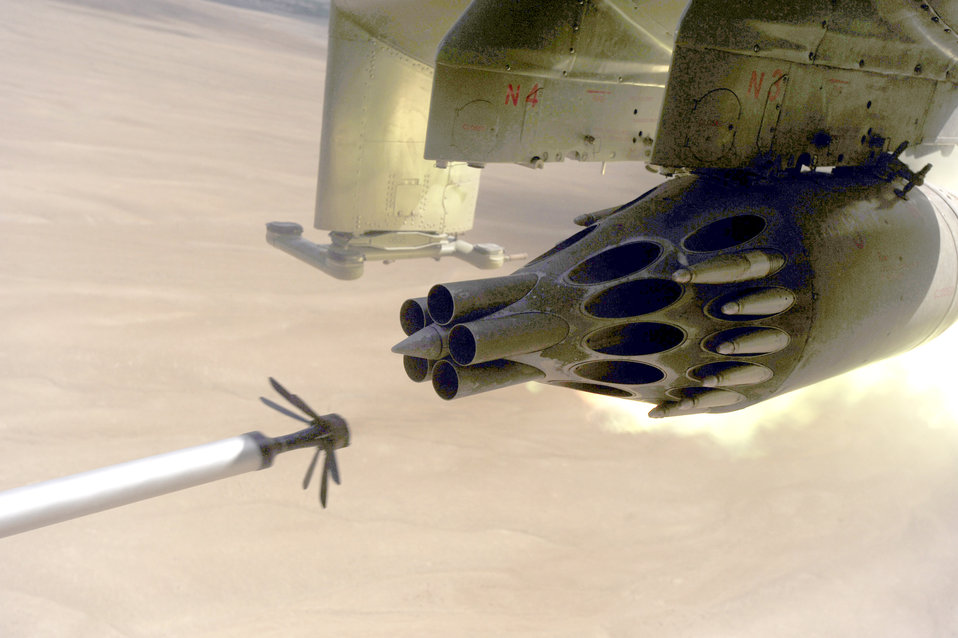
Armament adviser

A KP long-guided rocket leaves its launcher mounted on an Afghan National Army Air Corps MI-35 helicopter on a live-fire training mission May 11, 2010, over Afghanistan.